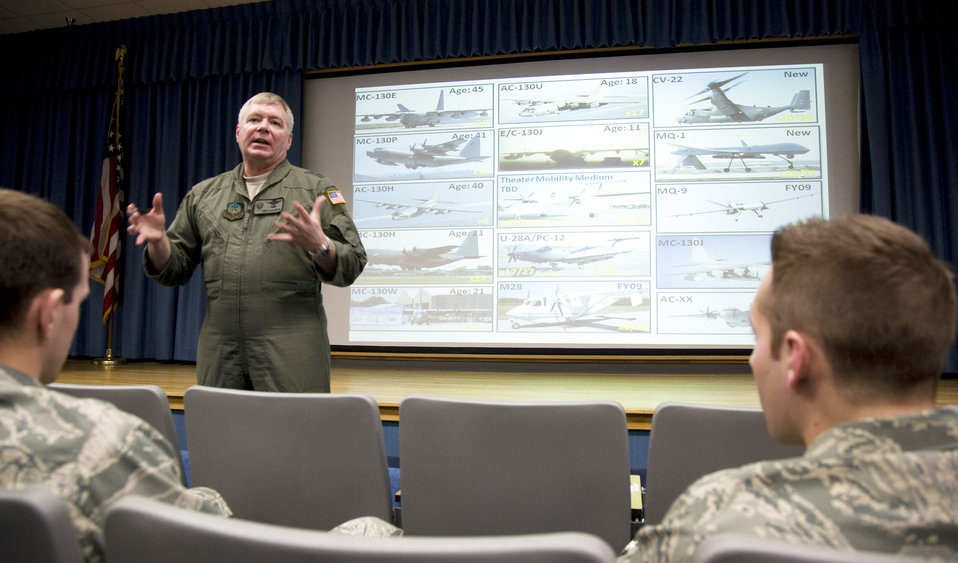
Special operations officials seek best, brightest pilots

Major Gen. Kurt A. Cichowski talks to student pilots at the 80th Flying Training Wing's Euro-NATO Joint Jet Pilot Training Program March 6 at Sheppard Air Force Base, Texas. The general said Air Force Special Operations Command offers a rewarding career for young officers, and also allows them to